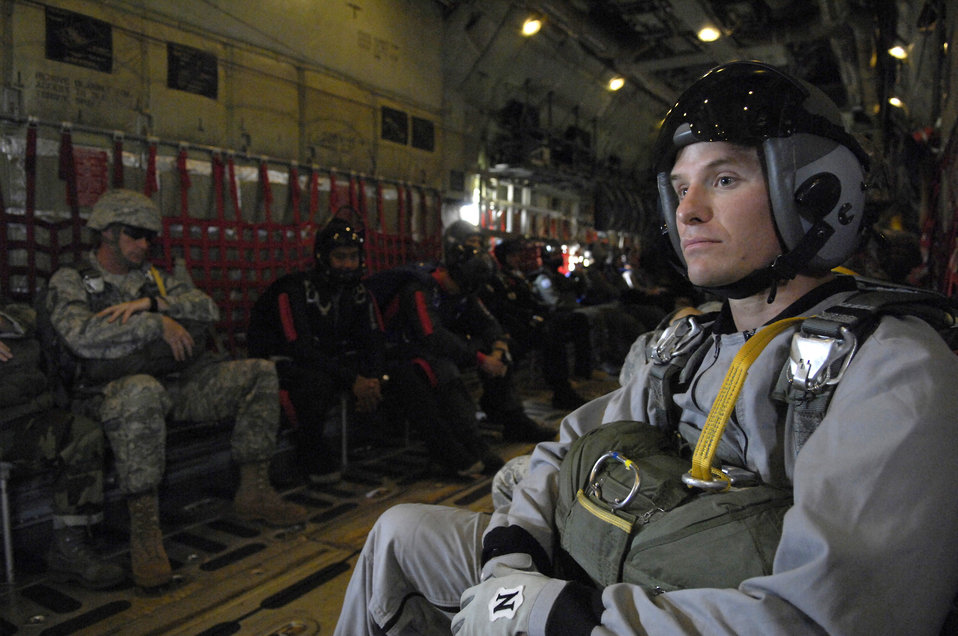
Jump training at Lackland AFB

Staff Sgt. Brian Daubert sits inside a Marine C-130 Hercules as it flies over Lackland Air Force Base, Texas, July 23. Sergeant Daubert is a SERE specialist from the 342nd Training Squadron at Lackland AFB. Aircrew and aircraft are from the Marine Aerial Refueler Transport Squadron 234 at Joint Reserve Base/Naval Station Fort Worth, Texas.